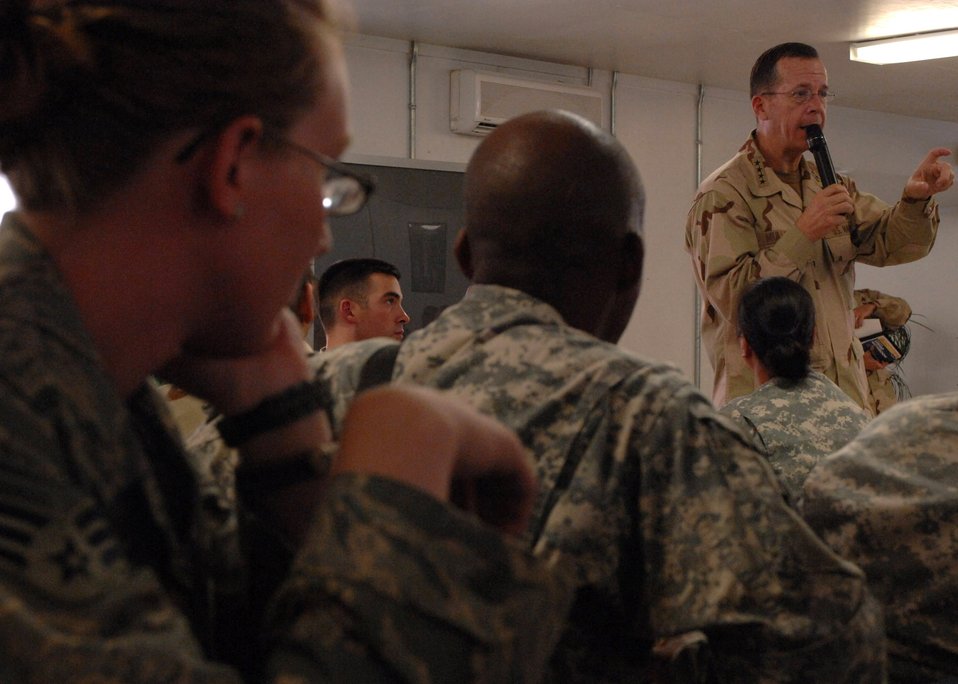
New JCS chairman visits Bagram

Adm. Michael Mullen, chairman of the Joint Chiefs of Staff, thanks servicemembers for their service during an All-Hands Call for E-6s and below at Bagram Airfield, Afghanistan, Oct 7.